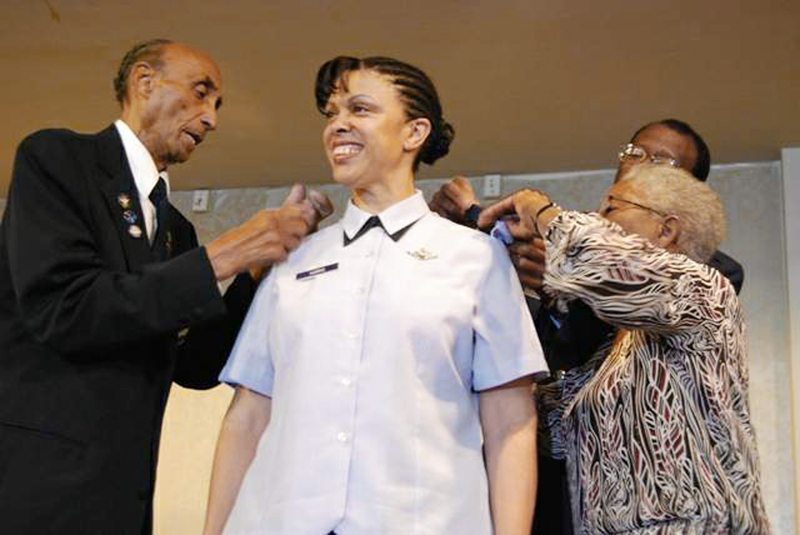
Historic promotion evokes reflection, bridges generations

Oliver Goodall, retired Brig. Gen. Leon A. Johnson, and retired Army Maj. Nancy C. Leftenant-Colon pin brigadier general stars on Brig. Gen. Stayce D. Harris during the 38th Annual Tuskegee Airmen, Inc., convention Aug. 7 in Las Vegas. The Air Force's highest ranking black female aviator, General Harris is currently based at the Pentagon as the assistant to the U.S. Africa Command commander. General Johnson is the former mobilization assistant to the Headquarters Air Education and Training Command director of operations, Mr. Goodall is an original Tuskegee Airman, and Major Leftenant-Colon is the first black nurse in the Reserve or active-duty Army nurse corps.